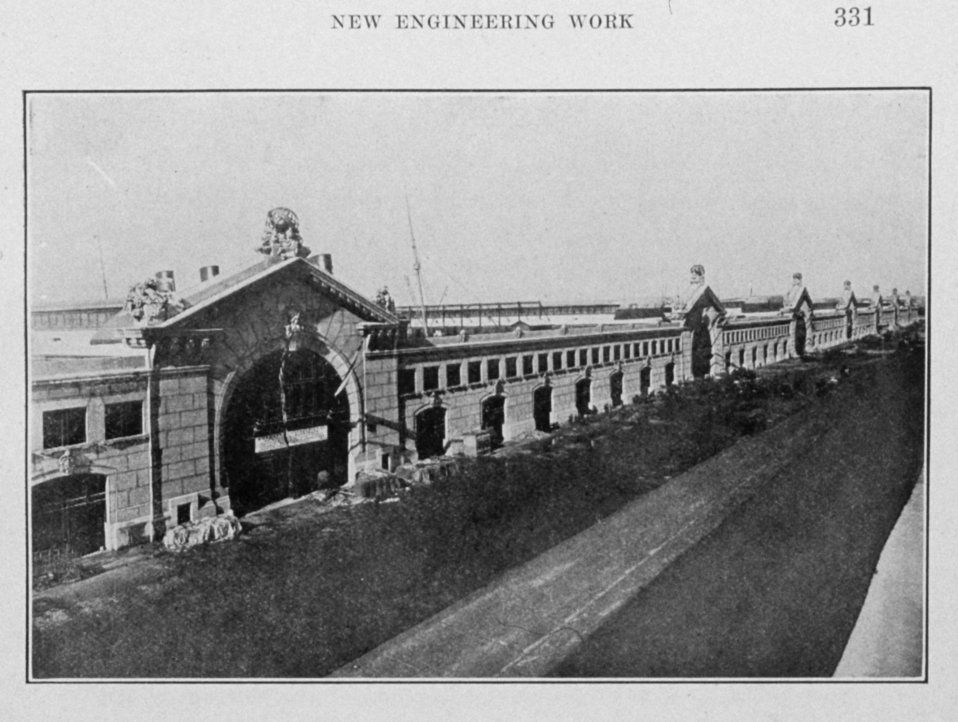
Chelsea Piers, Manhattan. In: The Municipal Engineers Journal, Vol. 1, No. 5, November 1915. Library Call No. M 1270 F 419.